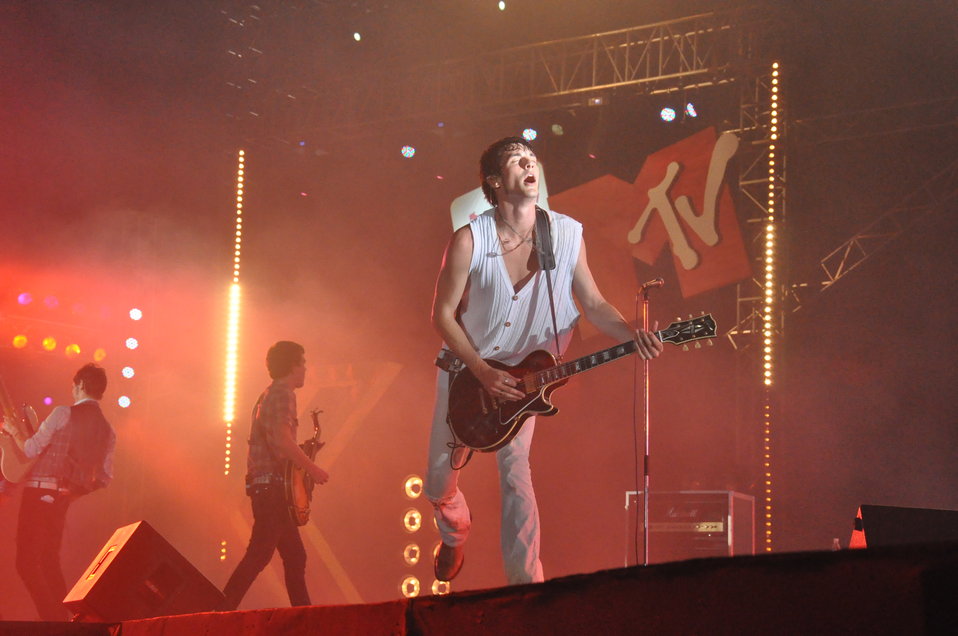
USAID MTV EXIT HCMC Concert

The Click Five performs a concert in Ho Chi Minh City against human trafficking, April 17, 2010